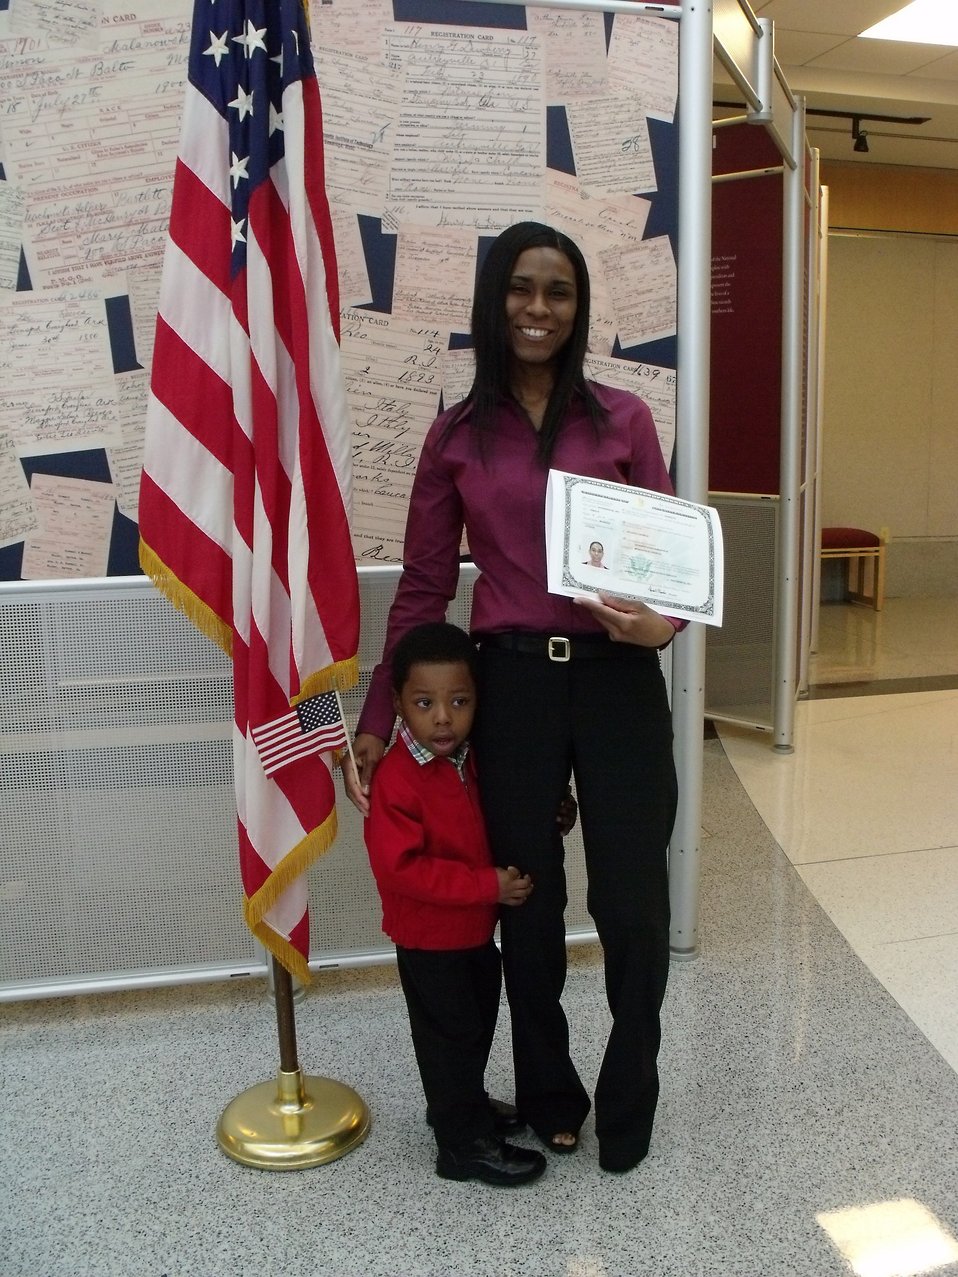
New Citizens